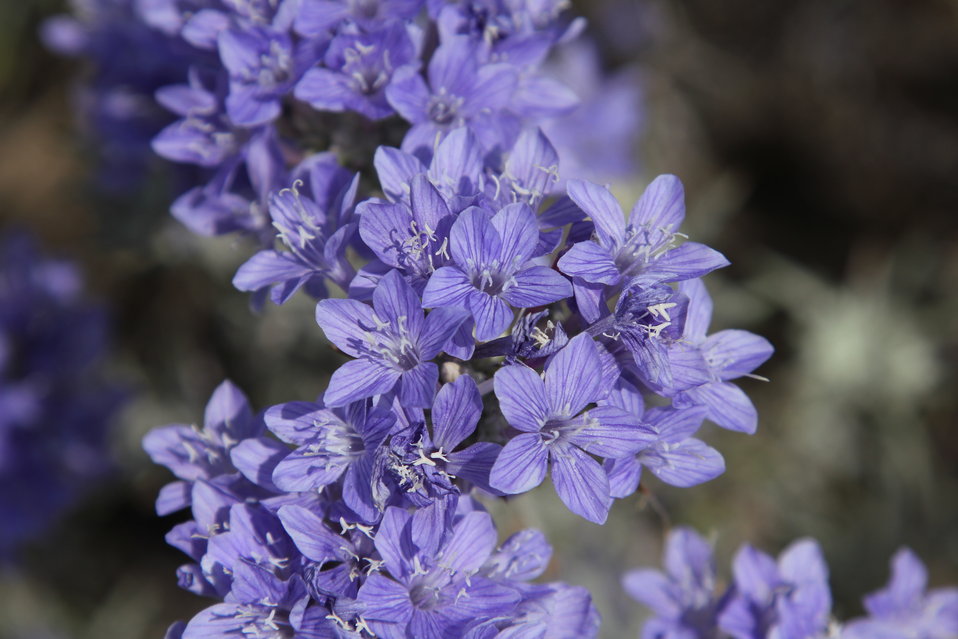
Santa Ana River woolly star flowers

Santa Ana River woolly star (Eriastrum densifolium ssp. sanctorum) has gray-green stems and leaves. The bright blue flowers are up to 1.4 inches long and are contained in heads of about 20 blossoms each.

This plant was listed as endangered on September 28, 1987.